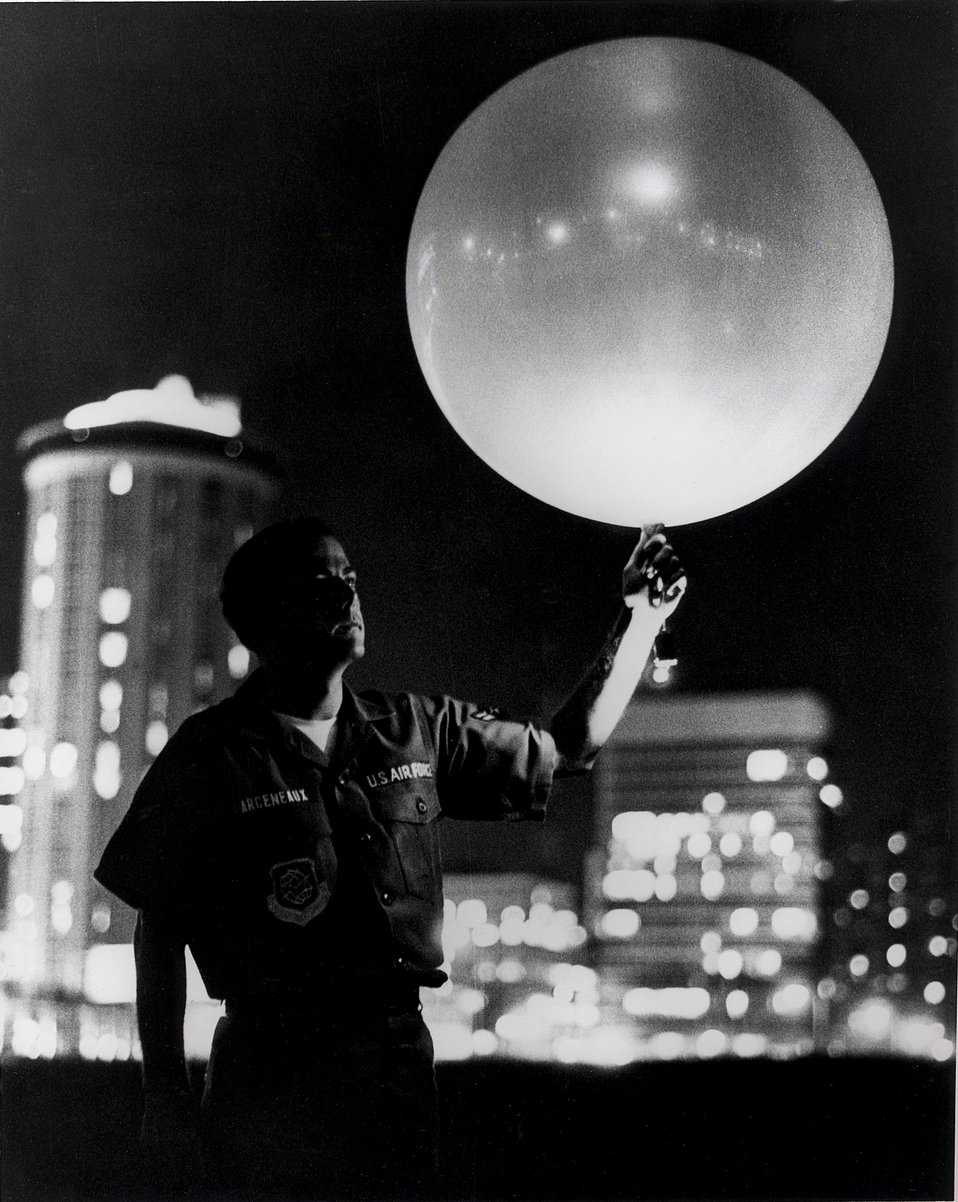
Airman 1st class Frank Arceneaux of US Air Force, 6th Weather Squadron, prepares to launch a helium-filled balloon as part of an Argonne study of weather.
c.1972